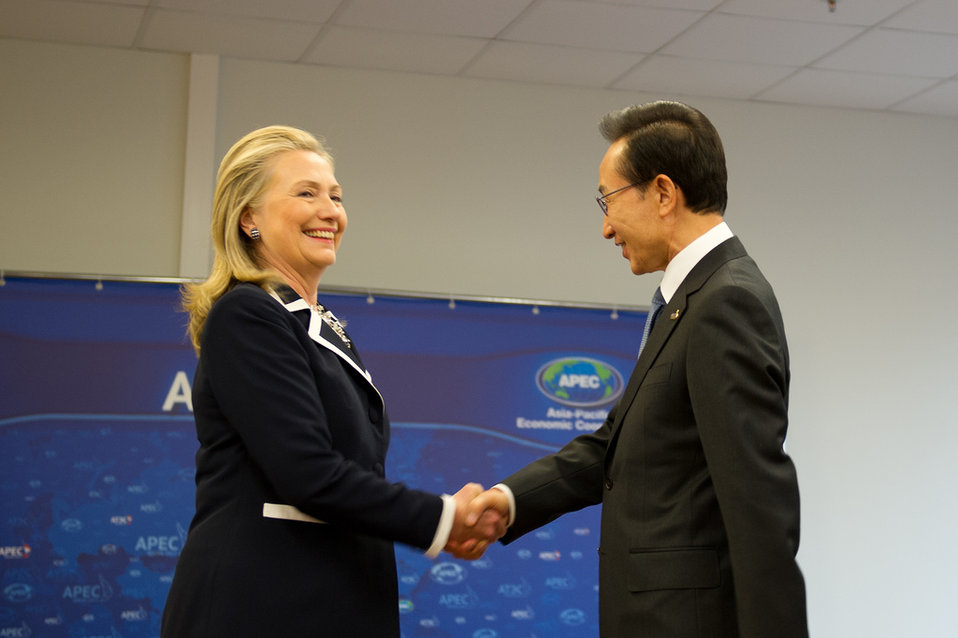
Secretary Clinton Shakes Hands With South Korean President Lee

U.S. Secretary of State Hillary Rodham Clinton meets with President Lee Myung-Bak of the Republic of Korea during the Asia-Pacific Economic Cooperation (APEC) Leaders' Week in Vladivostok, Russia, September 9, 2012.